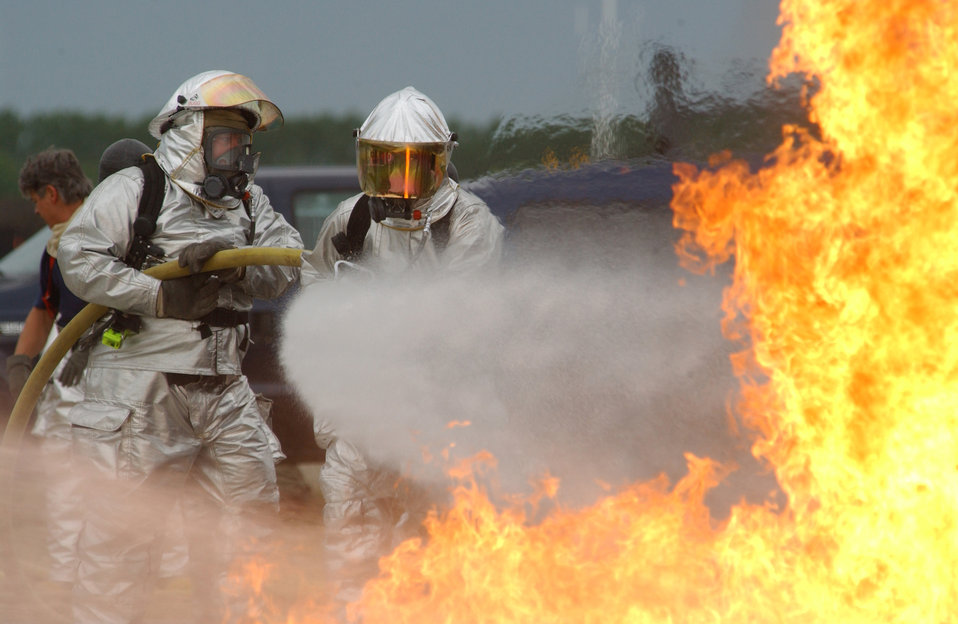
Fire stoppers

FARGO, N.D. -- A team of firefighters from the 185th Civil Engineer Squadron spray water during a mock aircraft burn at a training site here June 15. The mock aircraft burn area is used to provide annually required training for firefighters from all over the United States. These firefighters are members of the Iowa Air National Guard.